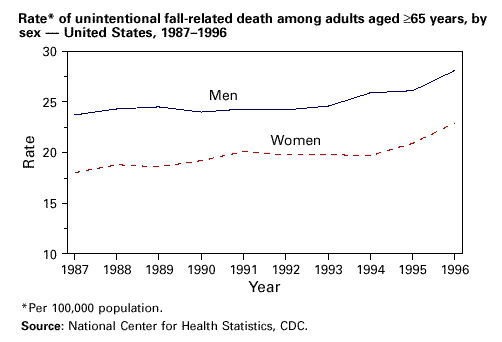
Rate of unintentional fall-related death among adults aged 65 years and older, by sex.